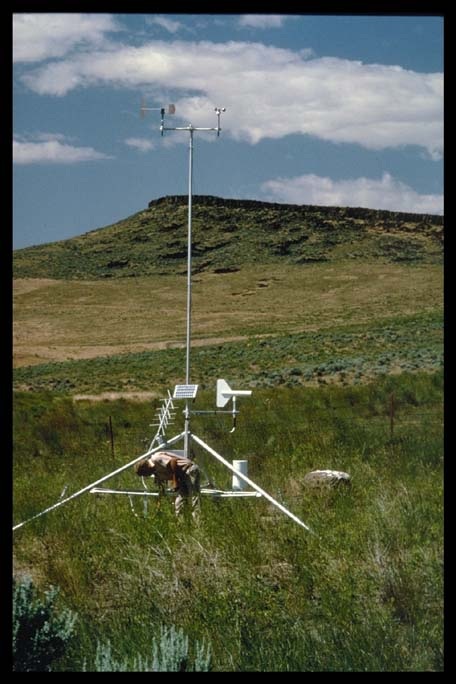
RAWS station